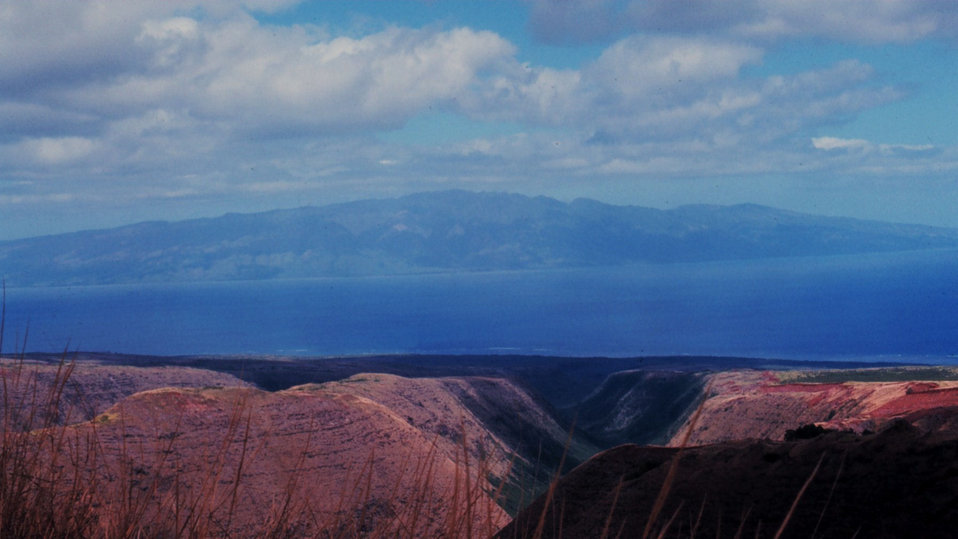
Lanai-Maui trip